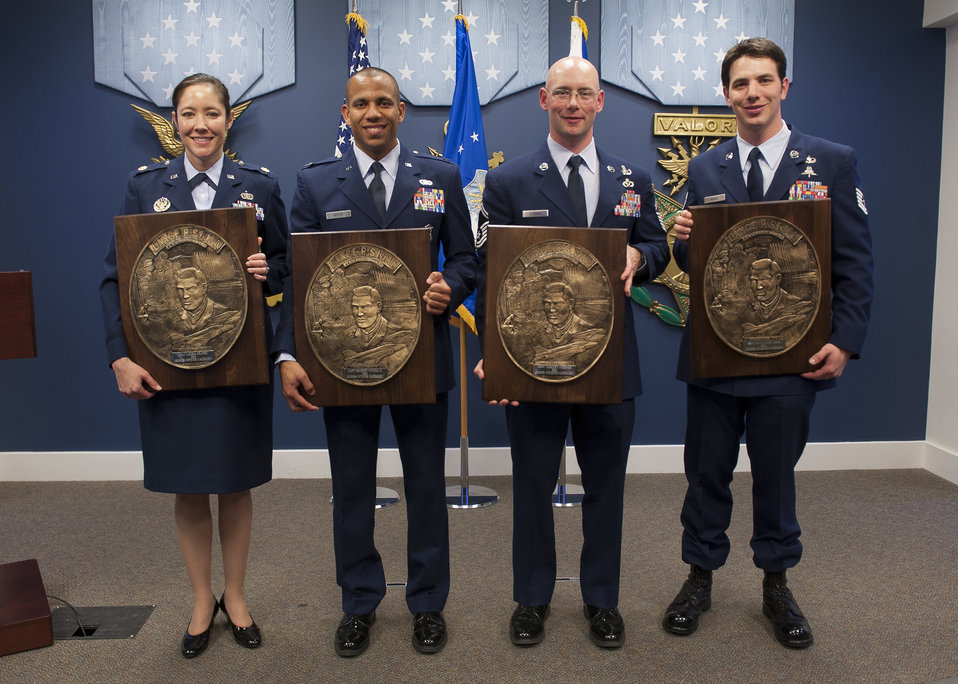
2011 Sijan awards

Chief of Staff Gen. Norton Schwartz presented the Lance P. Sijan USAF Leadership Award to this year's recipients: (from left) Maj. Laura DeJong, Capt Gilbert Wyche II, Senior Master Sgt. Timothy Sterner and Tech. Sgt. Nathanael Hoag, during a ceremony in the Pentagon's Hall of Heroes on April 6, 2012, Washington, D.C. The Sijan Award was created in 1981 to recognize individuals who demonstrate the highest qualities of leadership both in and out of uniform. Sijan, was an Air Force Academy graduate. At the time of his death he was an Air Force Captain and fighter pilot. He was shot down during a mission in Vietnam and later died while being held in a prisoner of war camp. He was awarded the Congressional Medal of Honor posthumously.